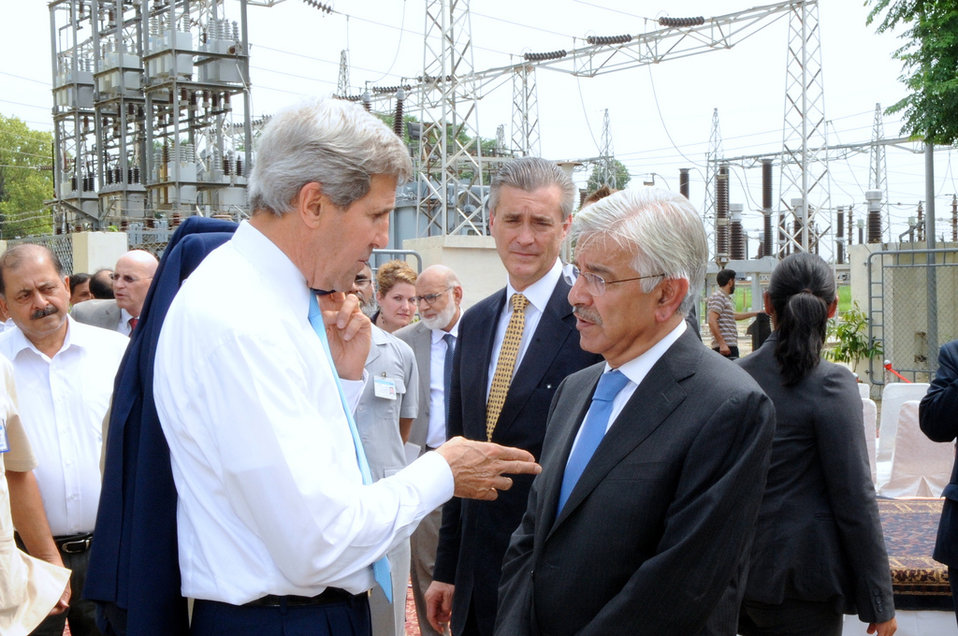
Secretary Kerry Speaks With Pakistani Power Minister Asif

U.S. Secretary of State chats with Pakistani Minister of Power and Water Khawaja Asif after the two visited a power station visit in Islamabad, Pakistan, on August 1, 2013, to discuss how USAID power meters save electricity.